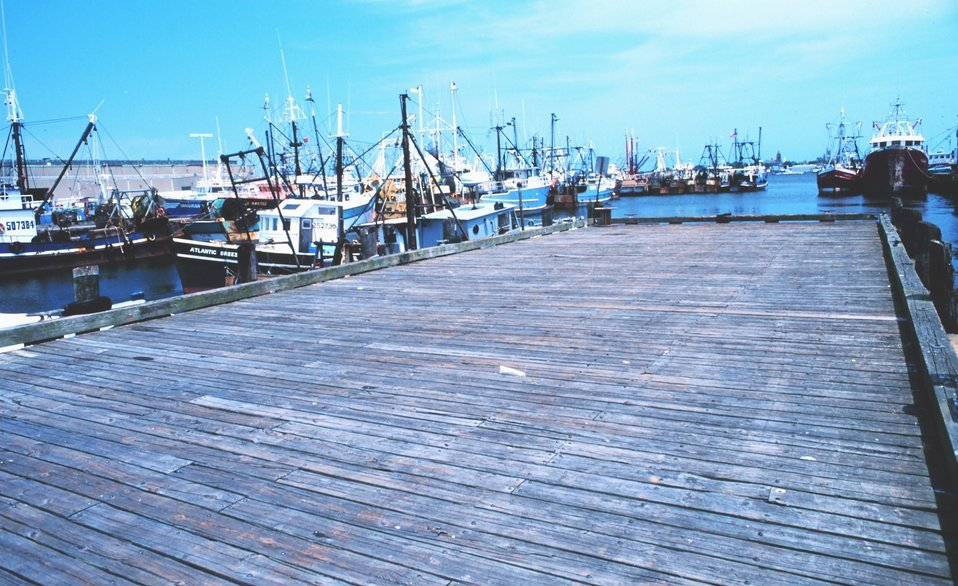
New Bedford fishing boats.